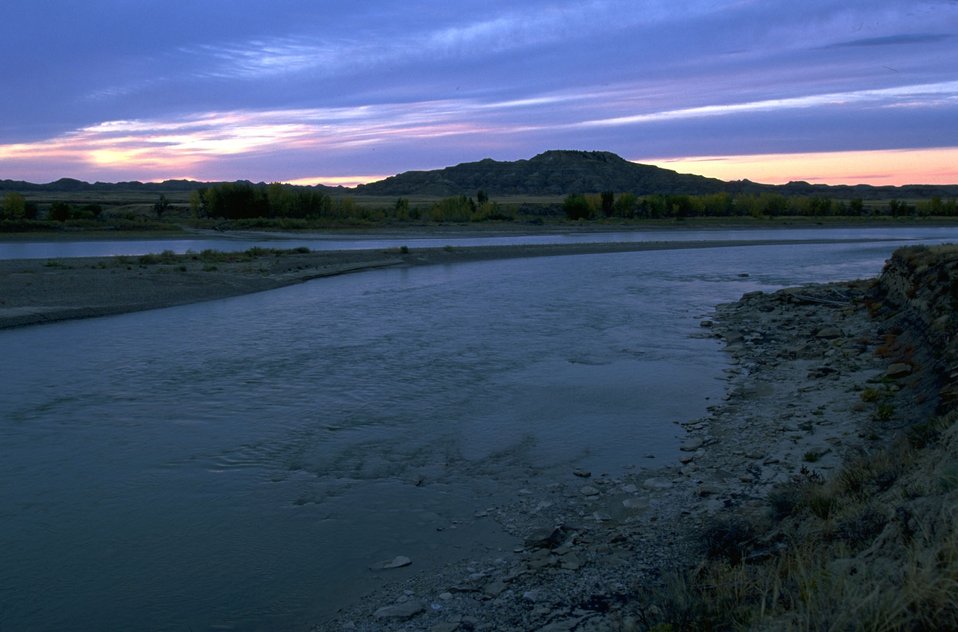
Sheridan Butte, Terry Badlands Wilderness Study Area - Yellowstone River in the foreground.